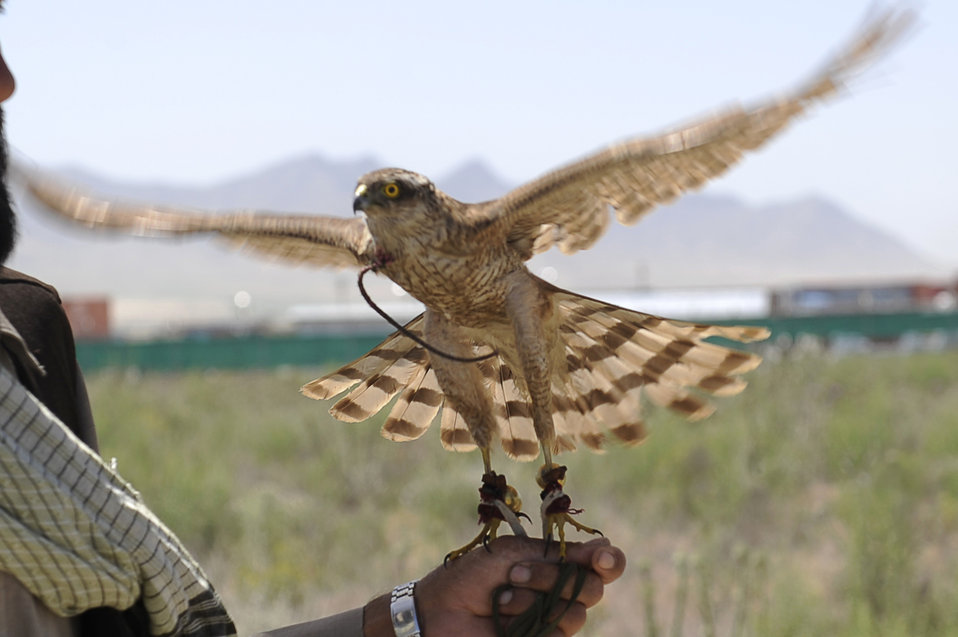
Afghan falconers and Airmen keep airfield safe

Basha, a falcon used to catch birds, expands his wings May 24, 2010, at Bagram Field, Afghanistan. Afghan contractors work with the 455th Air Expeditionary Wing Safety Office to keep wildlife from interfering with flying operations.